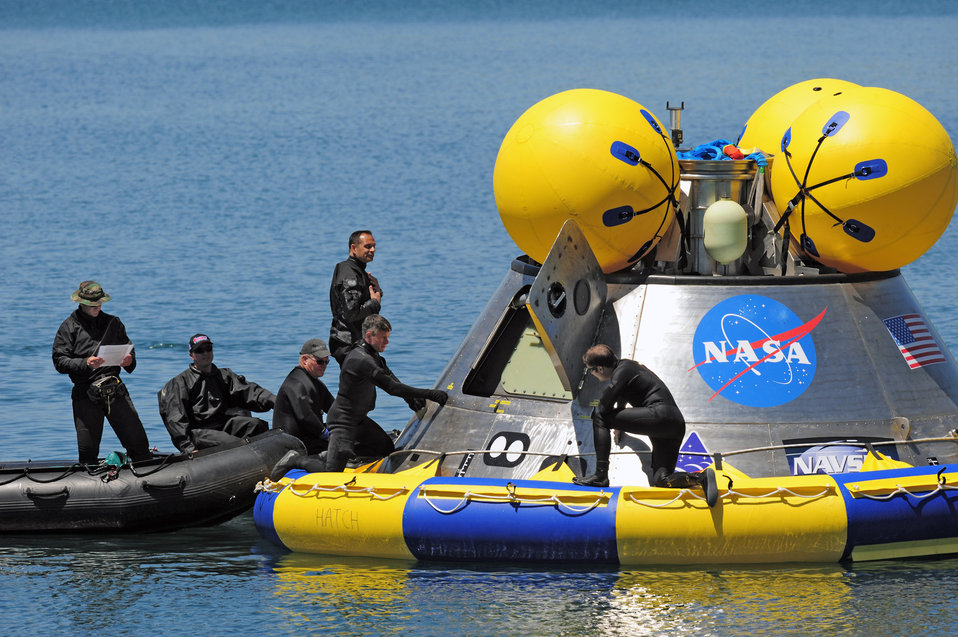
Pararescuemen conduct water test of new NASA capsule

Pararescuemen test the hatch mechanism during recovery testing on a mockup of the Orion crew exploration vehicle March 8 at the Trident Basin at Port Canaveral, Fla. The team also tested an inflatable flotation collar (the blue and yellow ring seen around the base of the capsule), which is designed both to stabilize the capsule after water landing and provide a platform for recovery personnel to stand on during the operation. Reservists from the Air Force Reserve's 920th Rescue Wingprovide contingency medical and recovery support for all NASA shuttle launches.